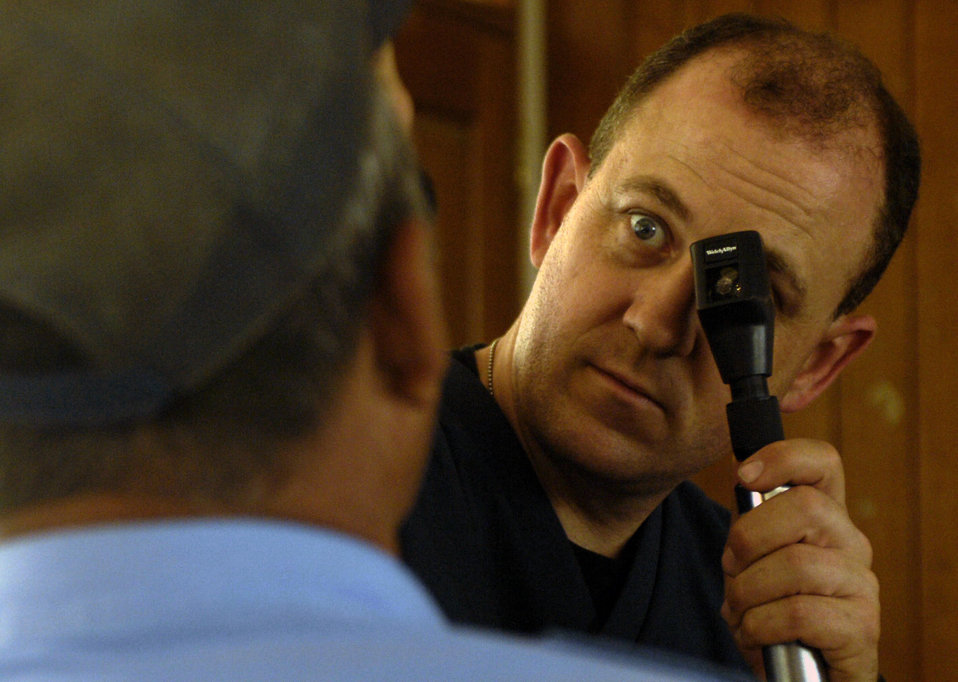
New Horizons - Nicaragua 2007 finishes MEDRETE missions

Lt. Col. John Blackburn examines a Nicaraguan volunteer policeman's eyes March 19 at a makeshift optometry clinic at Collegio San Gregorio. Inside the local school, 836 Nicaraguan patients were given free medical, dental and optometry care during a Medical Readiness Training Exercise as part of New Horizons-Nicaragua 2007. Colonel Blackburn is an optometrist with the California Air National Guard's 144th Medical Group.